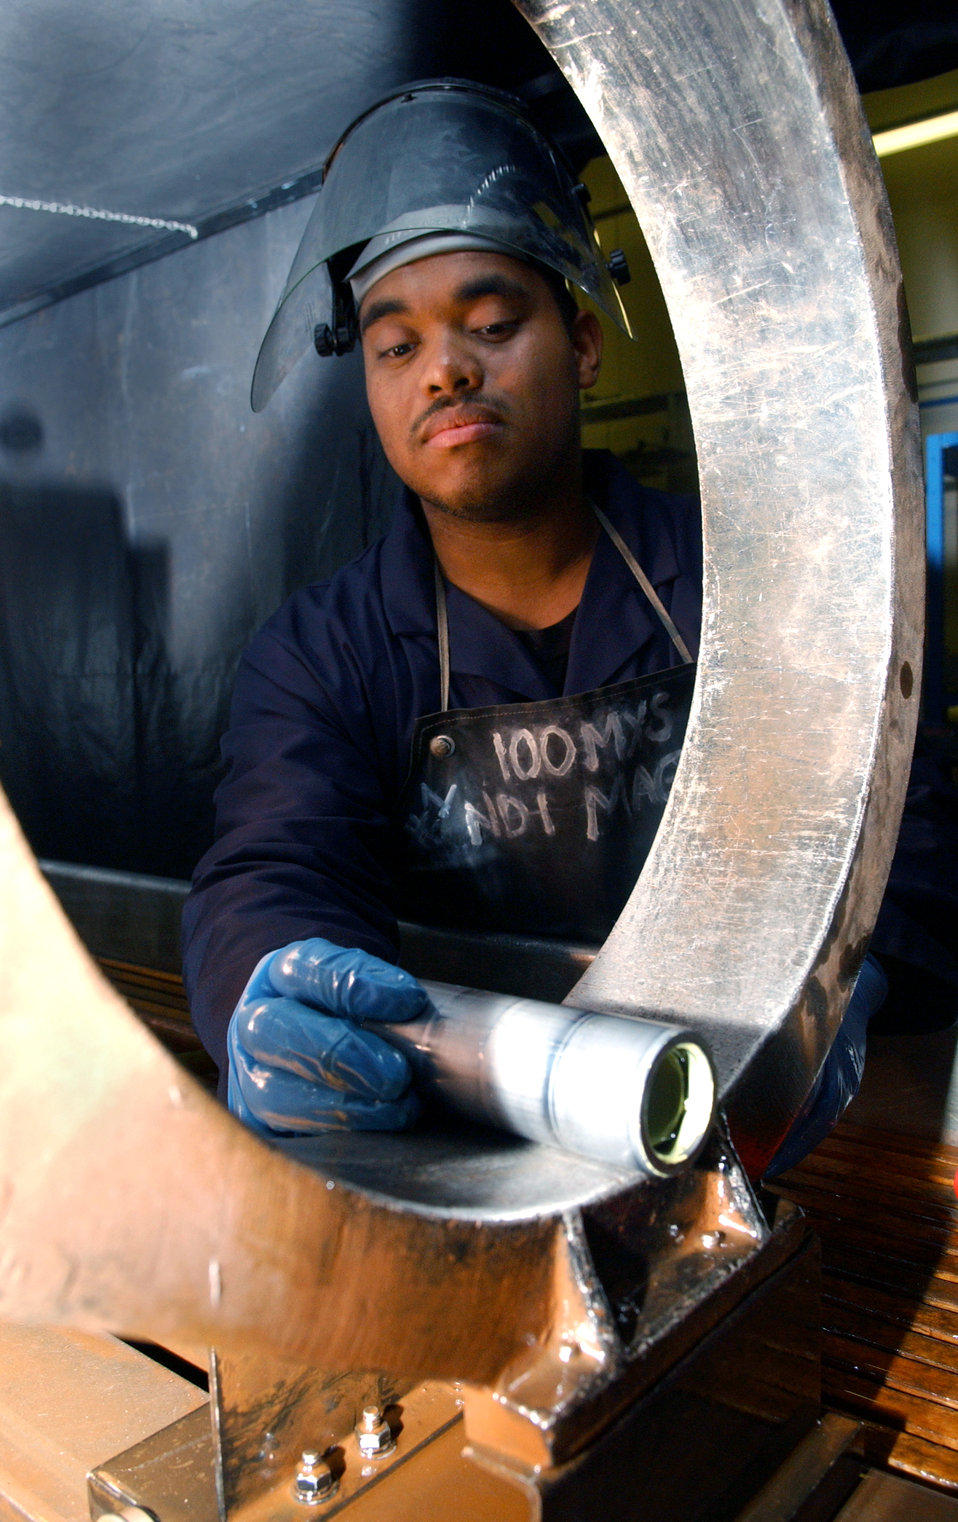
Non-destructive inspection

Airman Philip Liggins uses a magnetic coil to inspect an engine mount fuse pin at Royal Air Force Base Mildenhall, England, on Tuesday, June 20. Magnetic particle fluid is poured over aircraft parts; when it seeps into the cracks, it helps detect cracks and defects. Airman Liggins is a non-destructive inspection specialist with the 100th Maintenance Squadron.